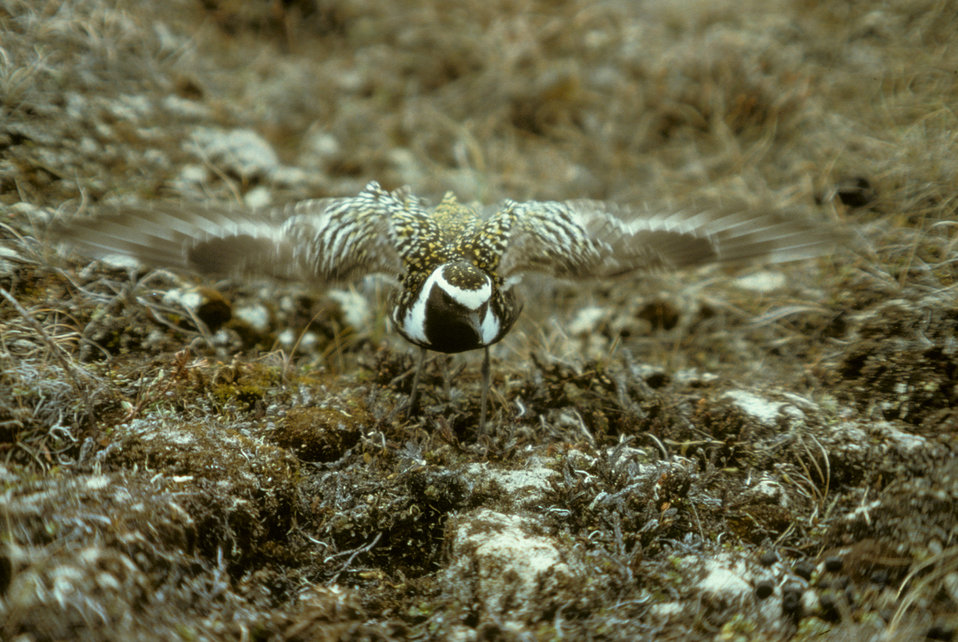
American Golden Plover and Nest

Feigning at nest at Teshekpuk Lake, North Slope of Alaska.